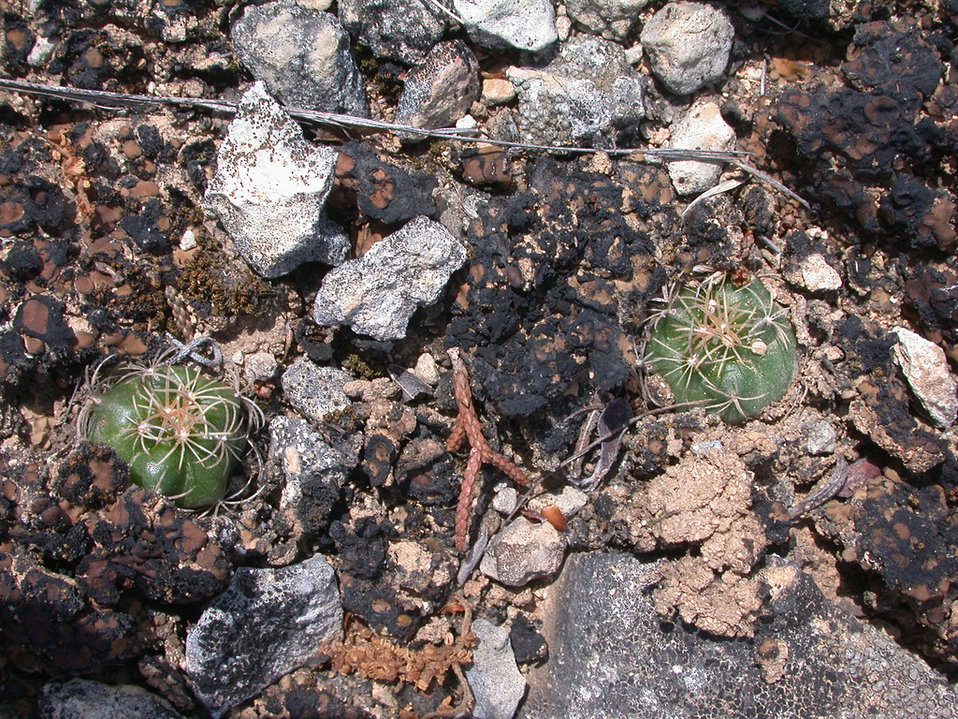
Endangered Tobusch fishhook cactus (Ancistrocactus tobuschii)

Tobusch fishhook cactus. Note lichens and blue-green alga growing in vicinity.